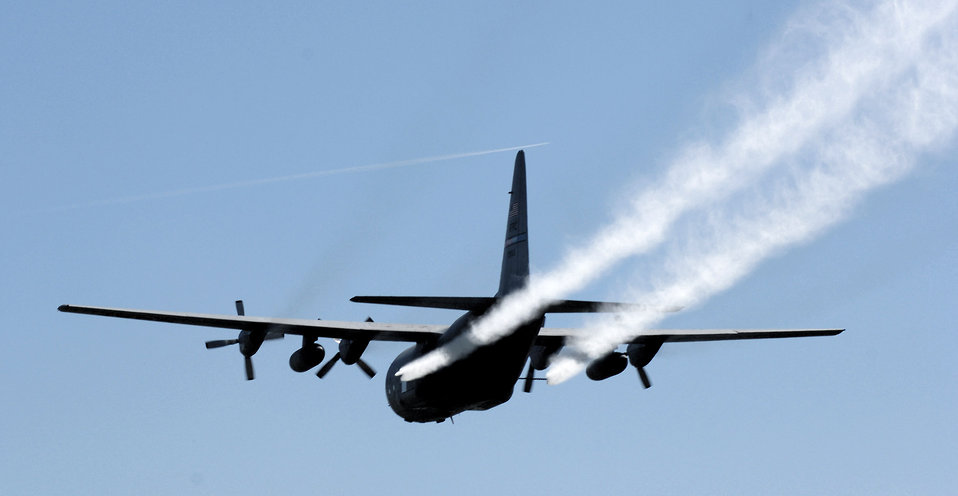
Reserve C-130s continue spray missions over Louisana

A C-130 Hercules aircraft from the 910th Airlift Wing, Youngstown Air Reserve Station, Ohio, will continue spraying mosquito pesticide over several Louisiana parishes Sept. 22 in the wake of heavy rainfall and flodding brought on by Hurricane Ike.